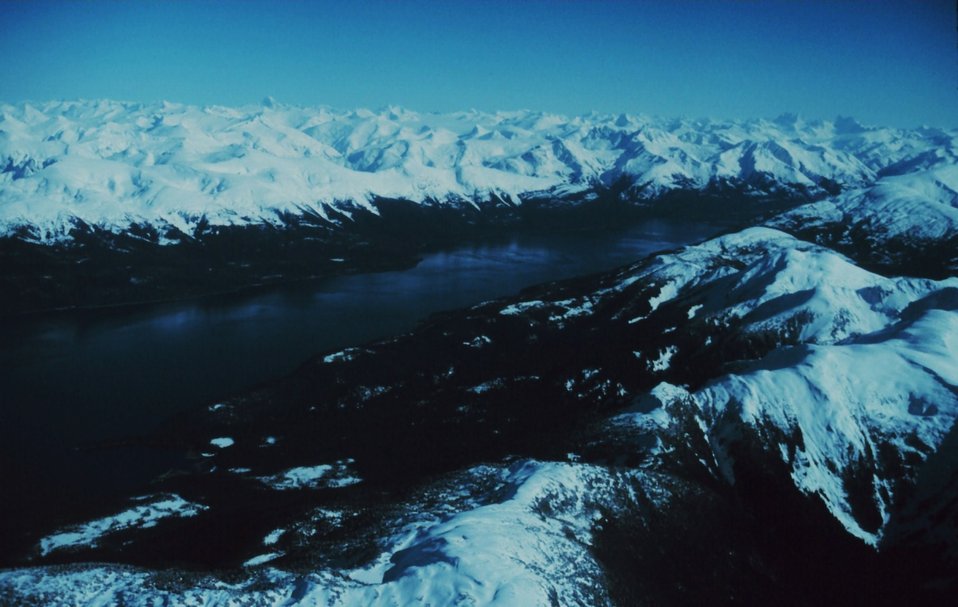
Stephens Passage